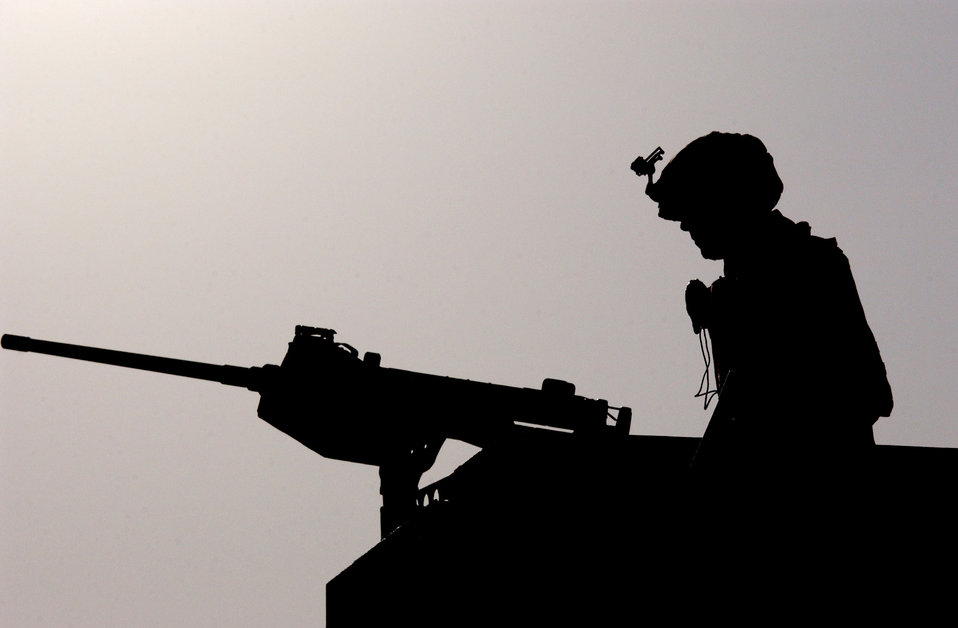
On enemy lines

MOSUL, Iraq -- Airman 1st Class Adam Vogan prepares for a convoy escort mission here recently. Airman Vogan is a vehicle operator for Detachment 1 of the 732nd Expeditionary Logistics Readiness Squadron here. He is deployed from Eglin Air Force Base, Fla.